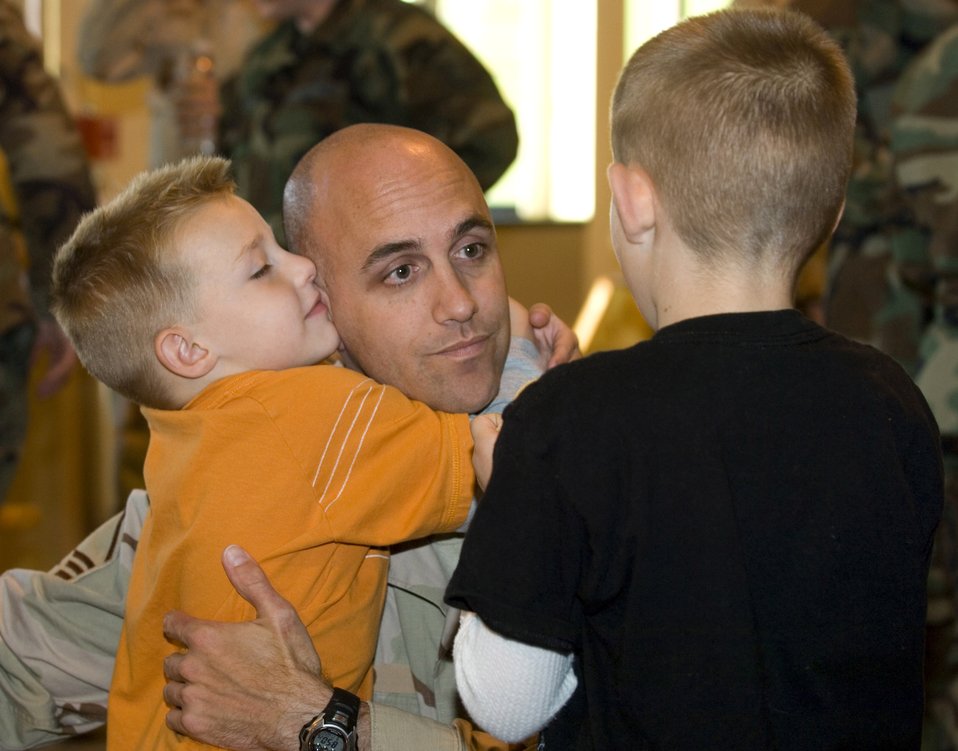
Affectionate homecoming

Master Sgt. Noah Wood is welcomed home by his two sons, Dekota and Dylan, Sept. 17 to Elmendorf Air Force Base, Alaska. Approximately 40 Airmen returned home to their friends and families from supporting the war on terrorism in Southwest Asia.